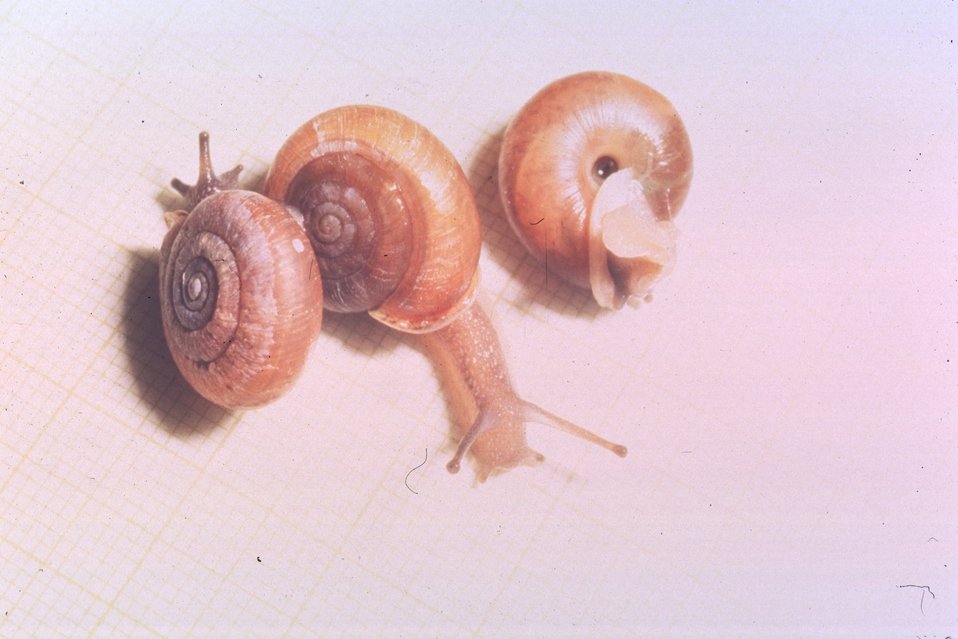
Columbia Oregonian (Cryptomastix hendersoni).